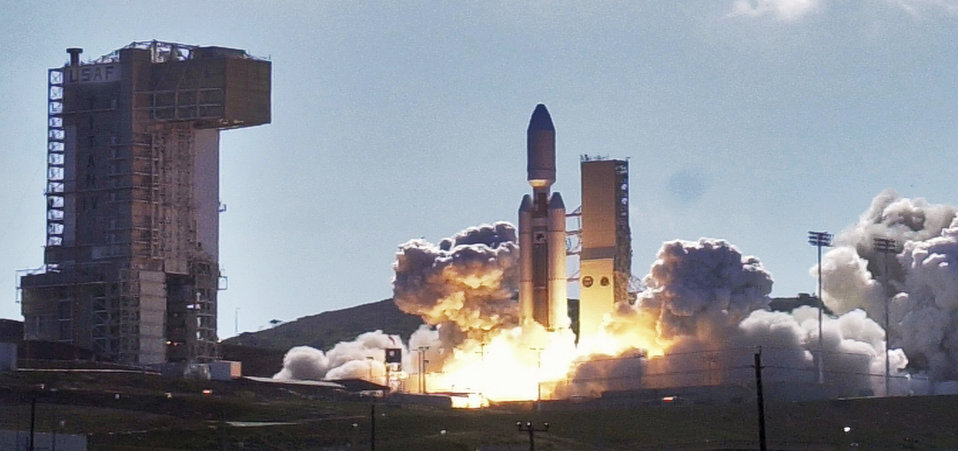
Titan IV Launch

VANDENBERG AIR FORCE BASE, Calif. -- A Titian IV Centaur rocket launches here Oct. 19. The rocket is the largest unmanned space booster used by the Air Force. The vehicle carries payloads equivalent to the size and weight of those carried on the space shuttle.